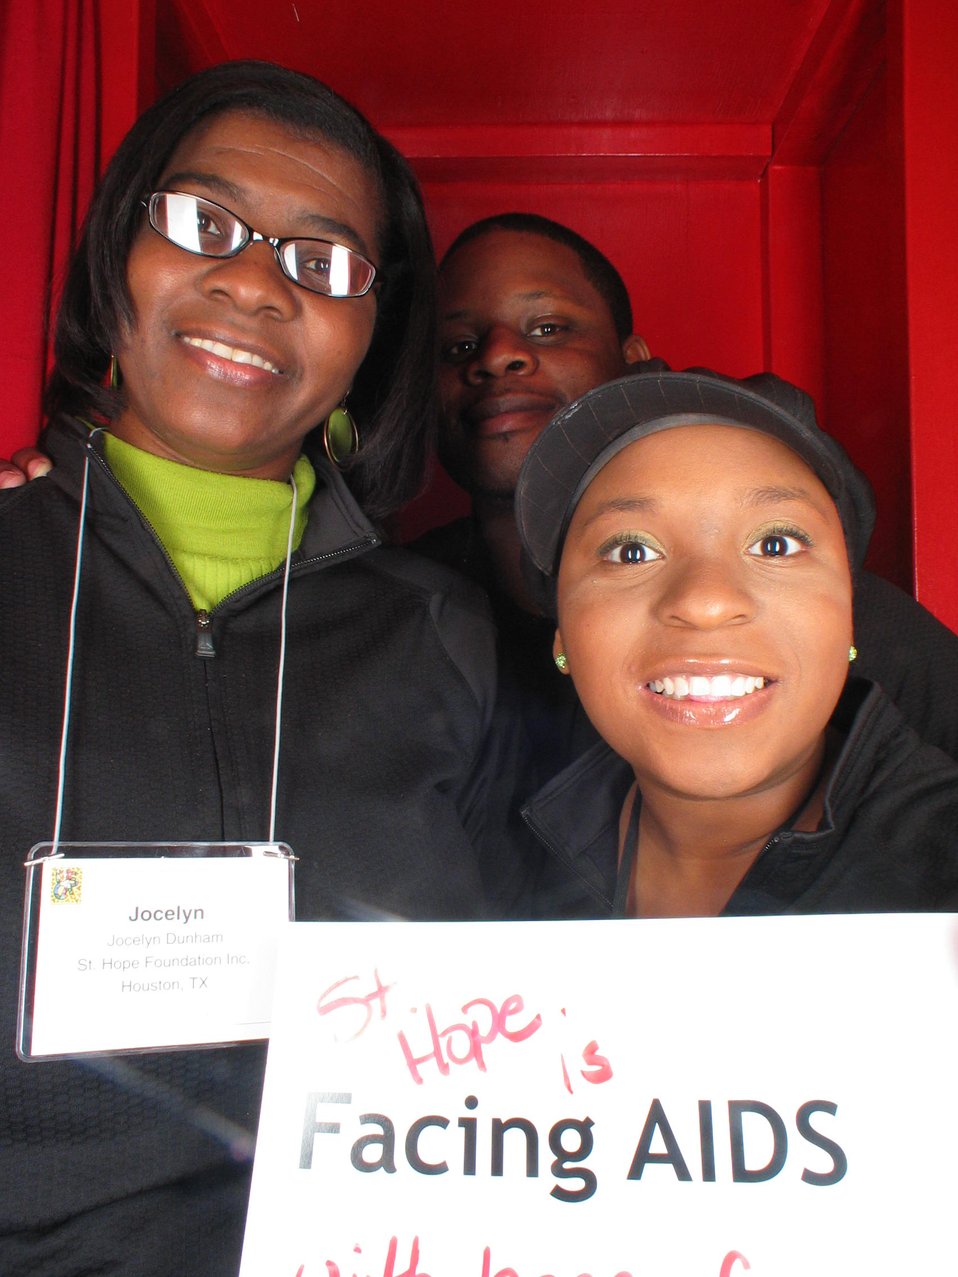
St. Hope is Facing AIDS